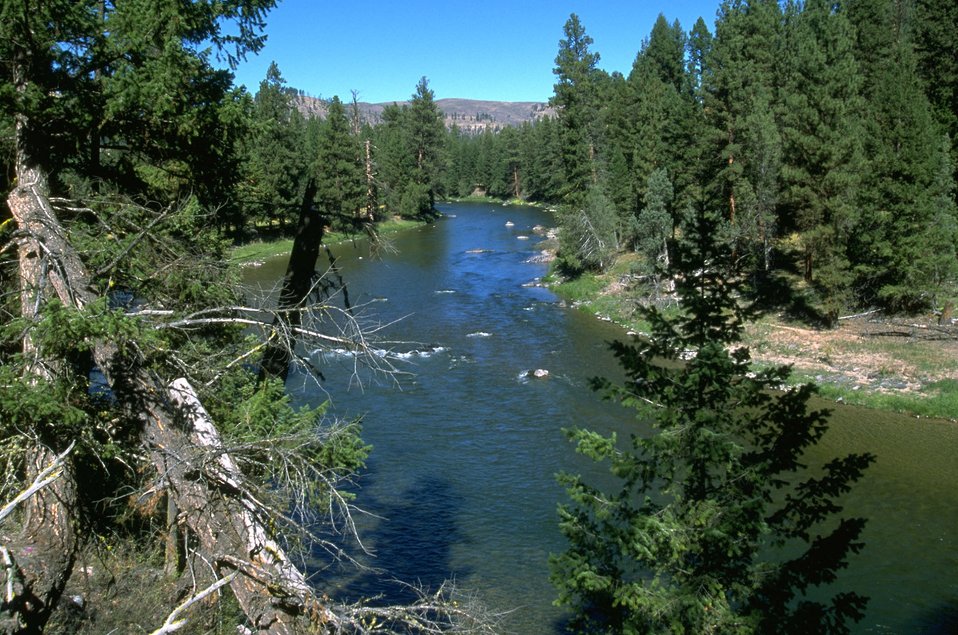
Blackfoot River